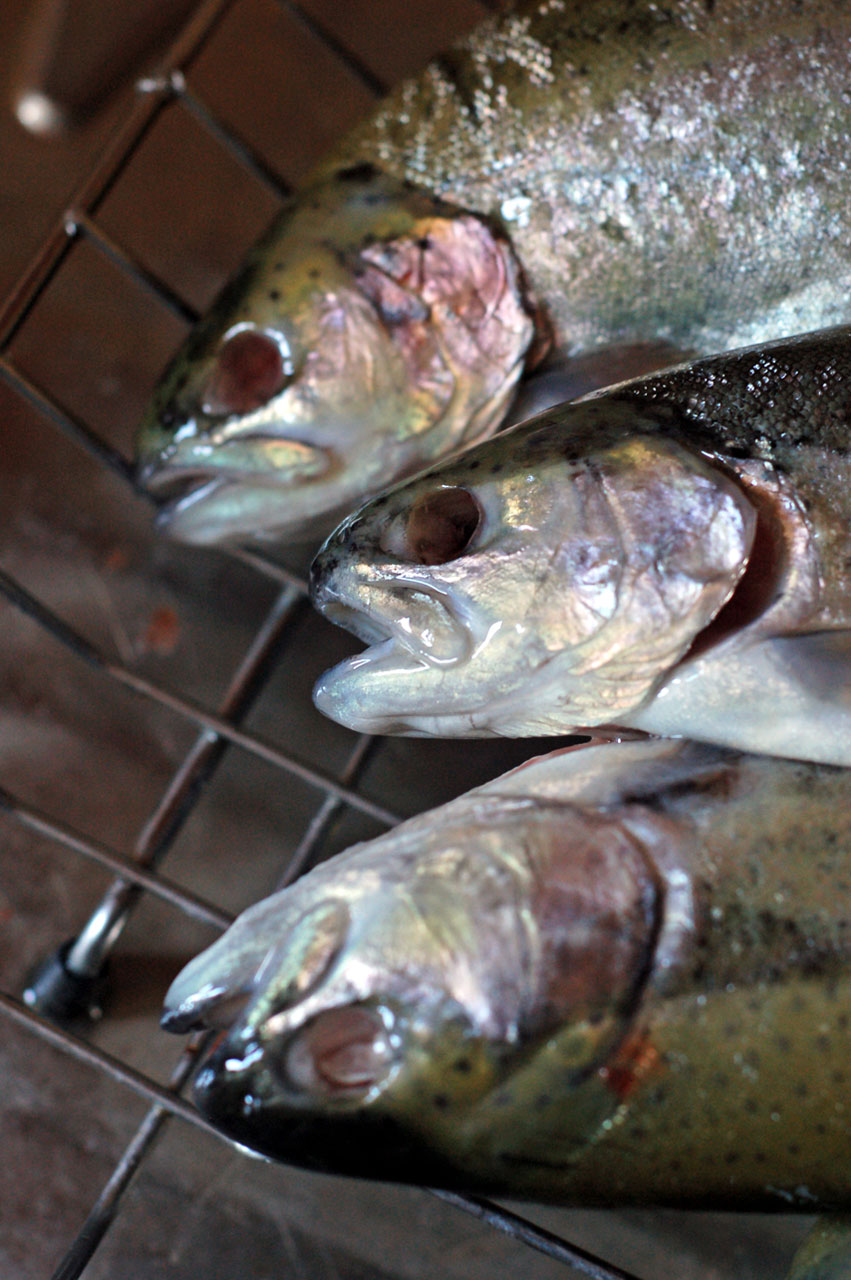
Scary grilled trouts

Three scary grilled trouts.